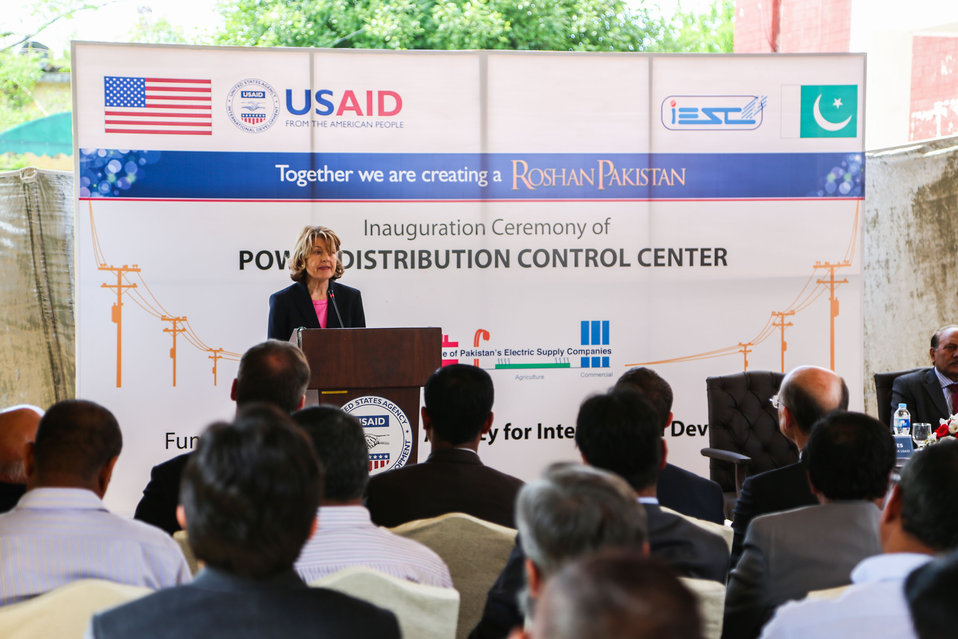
U.S. Improves IESCO’s ability to Reduce Unscheduled Load Shedding

Nancy Estes, Acting Mission Director, United States Agency for International Development (USAID), addressing the audience.